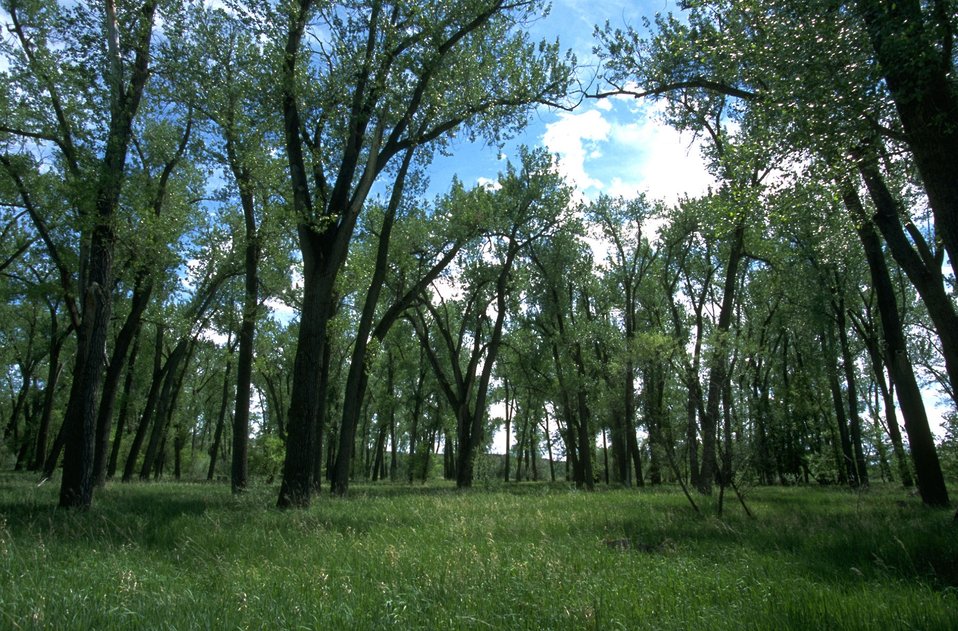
Cottonwood grove east of parking lot at the Sundance Lodge Recreation Area along the Clark's Fork of the Yellowstone River